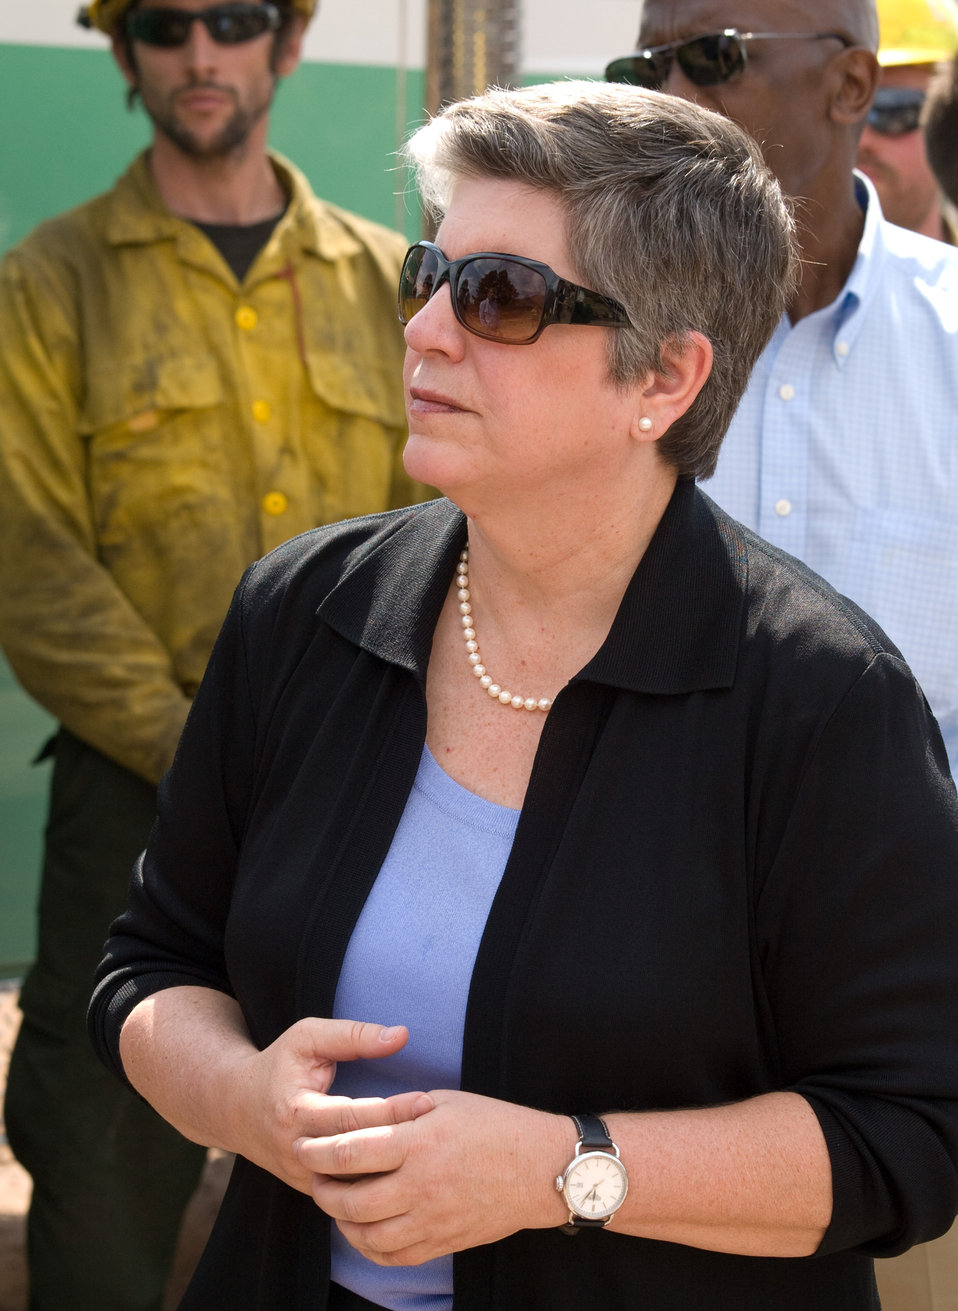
Homeland Security Secretary Janet Napolitano talks with firefighters about the Waldo Canyon Fire near Colorado Springs, CO on Tuesday, July 3, 2012.